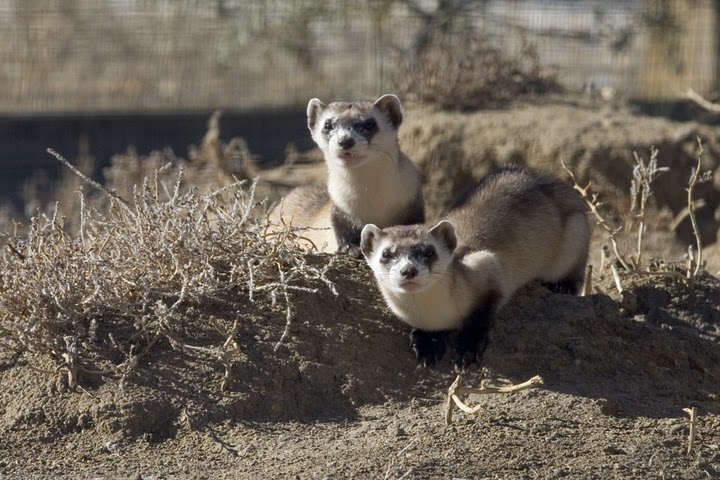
Pair of Black-footed Ferrets